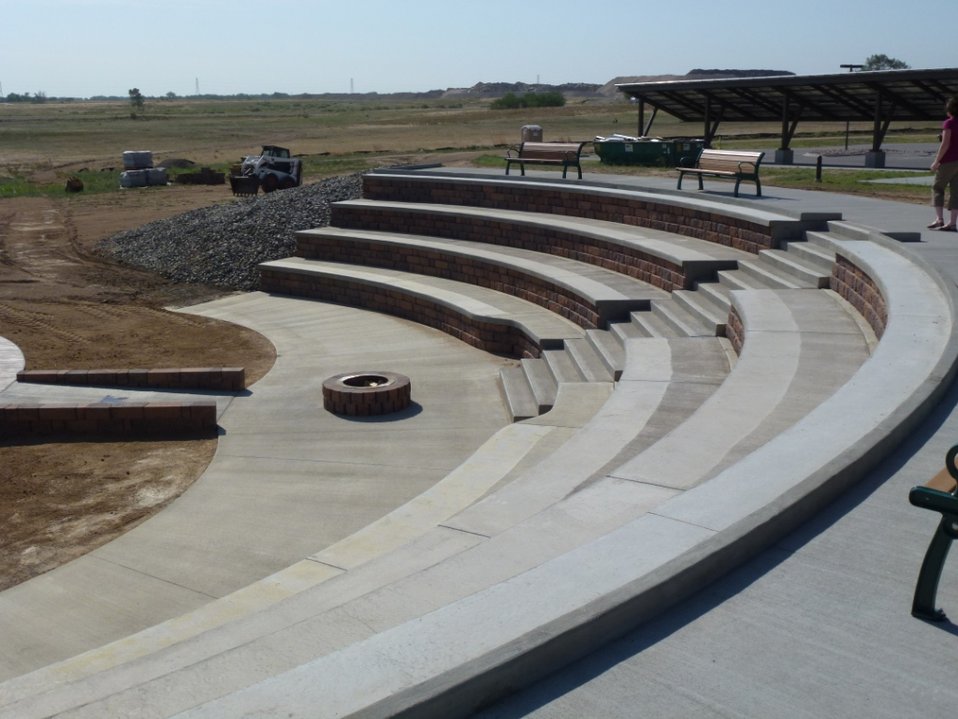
Rocky Mountain Arsenal National Wildlife Refuge’s Amphitheater

Thanks to the work of a Mountain-Prairie Region Refuge Maintenance Action Team (MAT), a new amphitheater was recently erected adjacent to the Rocky Mountain Arsenal National Wildlife Refuge’s visitor center in Commerce City, Colo.

The amphitheater is a fully accessible facility with seating for 175 to 200 spectators. It features a stage and fire pit for special programs. The addition of the amphitheater to the visitor center will enhance interpretive program delivery as part of the facility’s regular visitor services and will be used for special events. Commerce City has also expressed an interest in using the amphitheater for programs of its own.

The project was completed under budget and cost nearly half as much as the bids received from private contractors. According to rough estimates, the U.S. Fish & Wildlife Service saved approximately $70,000. The substantial cost savings was realized by employing the MAT, which is comprised of in-house maintenance workers with various skill sets from several stations across the region. Typically, deferred maintenance dollars pay for the project materials, labor, travel, room and board of MAT members. MAT projects usually take between one to five weeks to complete.

Construction began May 7, 2012 and concluded June 13, 2012 with a one-week pause in the middle of the project to allow MAT members a break. In total, the project took 34 12-hour-work days. The MAT worked more than 2,000 man hours on the project with no time lost due to injury or any safety-related issues.

The Refuge MAT consisted of:
• Rich Iwanski – Bear River Migratory Bird Refuge – Engineering Equipment Operator – Pre-construction organization, MAT team foreman, Equipment Operator and other general work.
• Cameron Fenrich – Mountain-Prairie Regional Office – Civil Engineer – Project Manager, Project Engineer, amphitheater design, on-site inspections, general construction work and overall construction and MAT team organization.
• Steve Raney – Baca National Wildlife Refuge – Maintenance Worker - Equipment Operator and other general work.
• Justin Wanzek – Valley City Wetland Management District – Maintenance Worker- Equipment Operator and other general work.
• Delbert “Skip” Palmer – Lee Metcalf National Wildlife Refuge – Maintenance Worker - Concrete Specialist and other general work.
• Tom Ronning – Rocky Mountain Arsenal National Wildlife Refuge – Range Conservationist - Truck Driver and other general work.